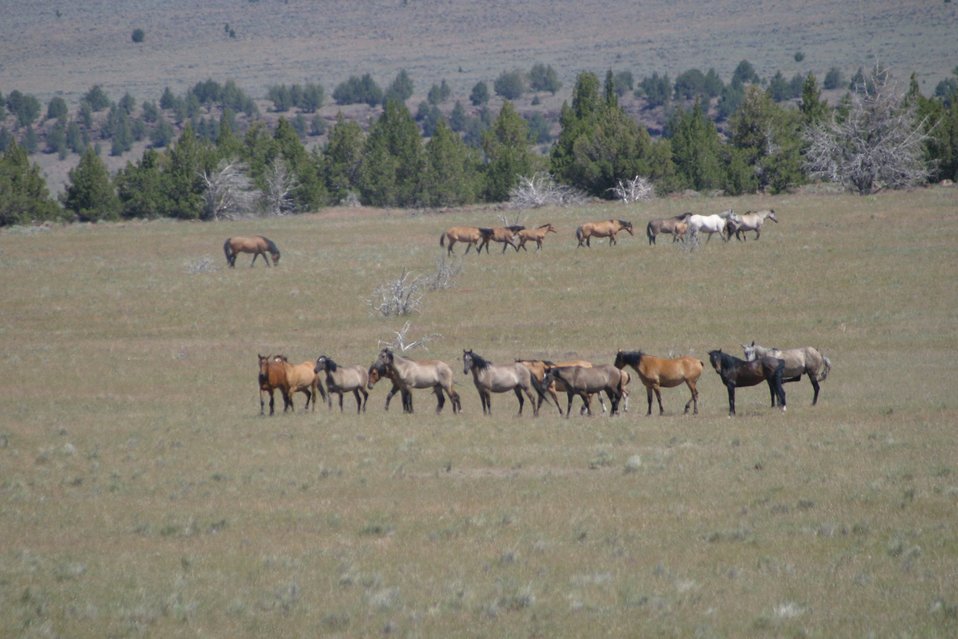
Wild Horse(s) in the Kiger Wild Horse Herd Management Area.